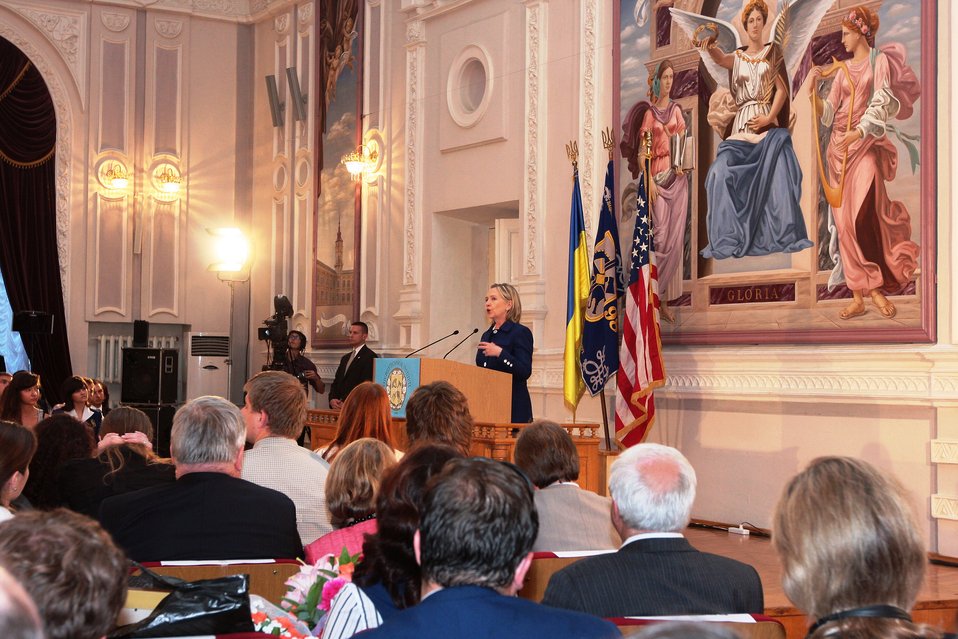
Secretary Clinton Addresses Kyiv Polytechnic Institute Town Hall

U.S. Secretary of State Hillary Rodham Clinton responds to students’ questions at Kyiv Polytechnic Institute in Kyiv, Ukraine, on July 2, 2010.